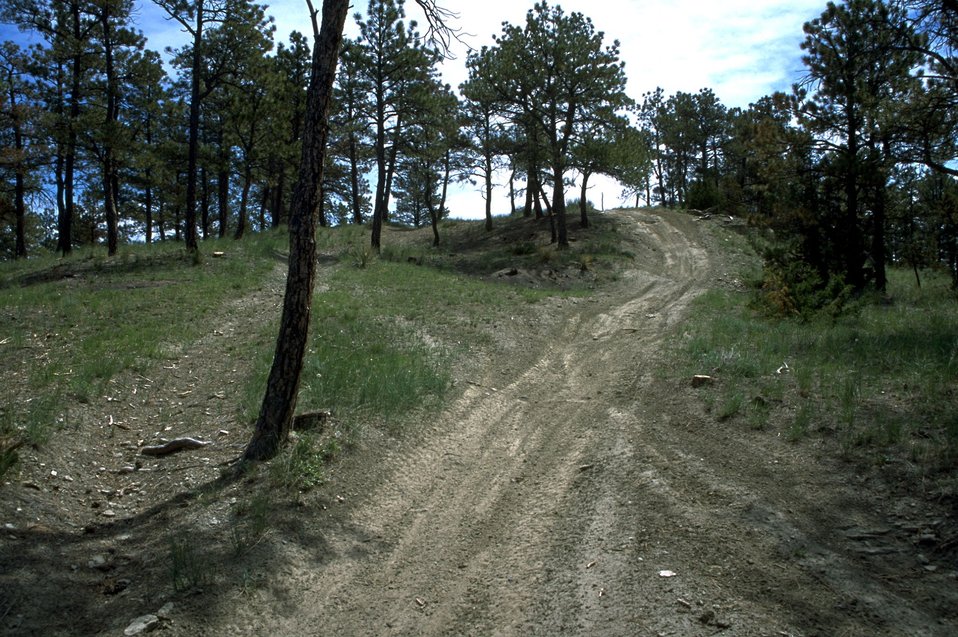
OHV trails in Area 1 in the Shepherd Recreation Area